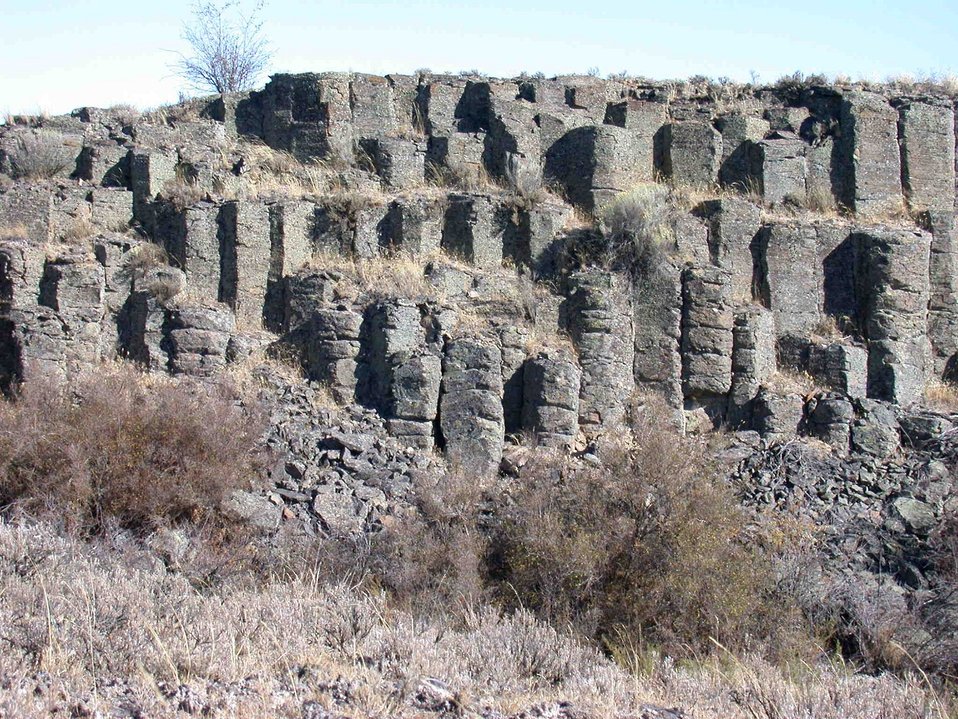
Sprague Parcel Geology Field Trip